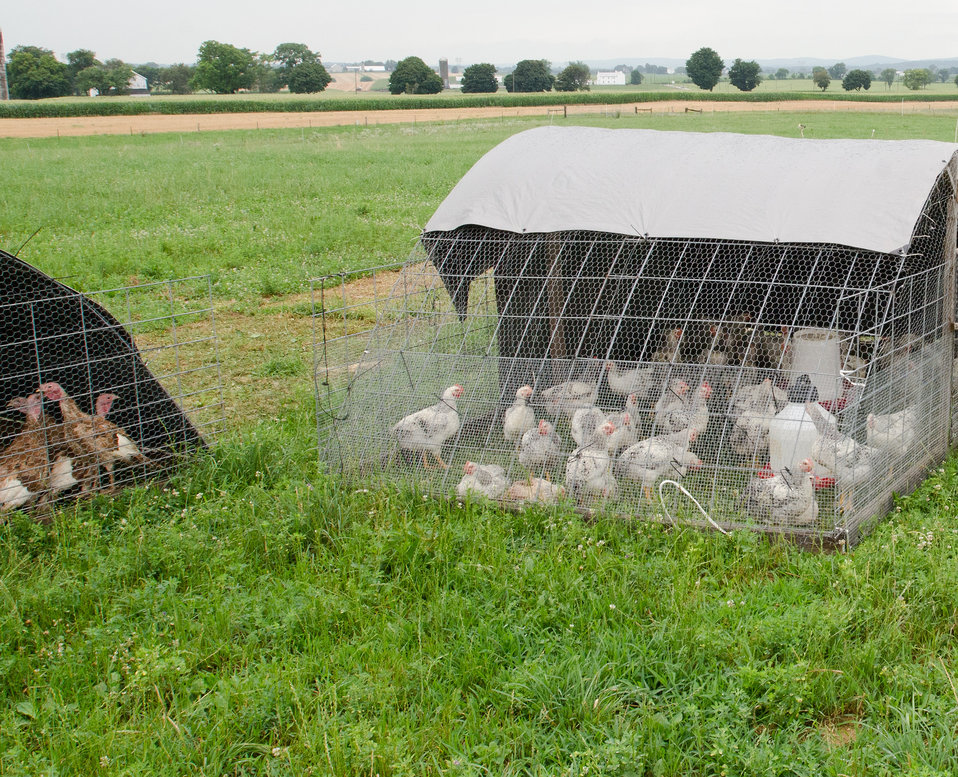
Broiler chickens and turkeys graze on organic pastures and live in pens that protect them from predators, direct sun light, and wind at Nick’s Organic Farm, owned by Nick Maravell in Adamstown, MD on Friday, July 12, 2013. The enclosures are light enough to be moved by hand, each day, one consecutive section at a time. The grazing trail can be seen behind the wire enclosure. This allows the pasture to easily recover from the grazing (just beyond the grazed area is the recovering grazing path a few weeks earlier). Organic grains and water are also in the enclosures. The farm produces Black Angus beef, chicken, turkey, eggs, hay, soybeans, corn, alfalfa, orchard grass, rye; and other crops. The cattle are100% grass-fed receiving certified organic pasture, certified organic hay (in winter), water and mineral salts mixed with sea kelp. The cattle are not fed hormones, antibiotics or animal products. Poultry feed from grain is ground from organic grain. The poultry also graze on organic pastures. The farm has conducted on-farm research with federal, state and non-profit agencies to refine organic practices. An organization such as the U.S. Department of Agriculture (USDA) Agricultural Research Service (ARS) center in Beltsville has been able to conduct research to improve organic crops and to breed and manage the cattle so that they have.